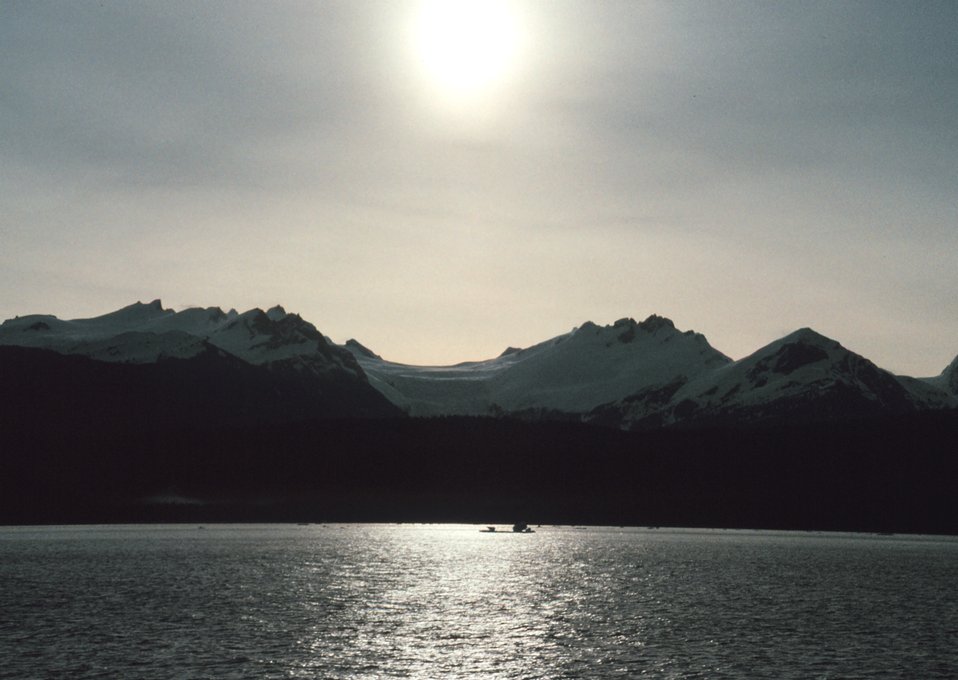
Lynn Canal, Haines area of southeast Alaska